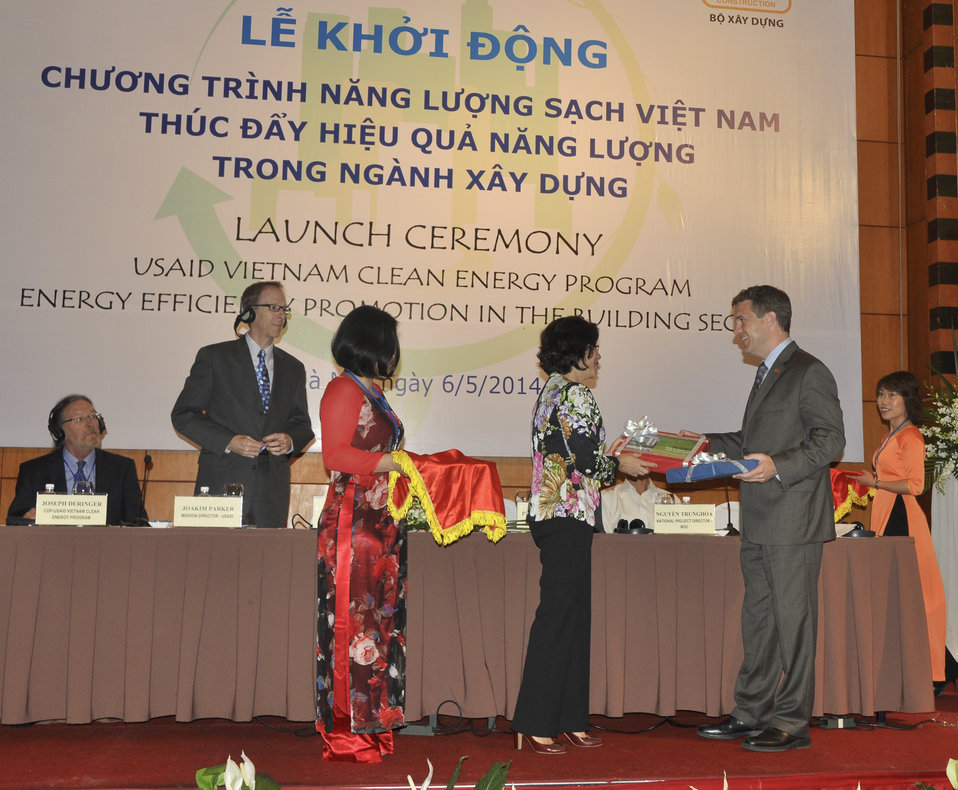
Ms. Phan Thi My Linh, Vice Minister of Vietnam’s Ministry of Construction and Acting Senior Deputy Assistant Administrator Jason Foley of USAID

Hanoi, May 6, 2014.